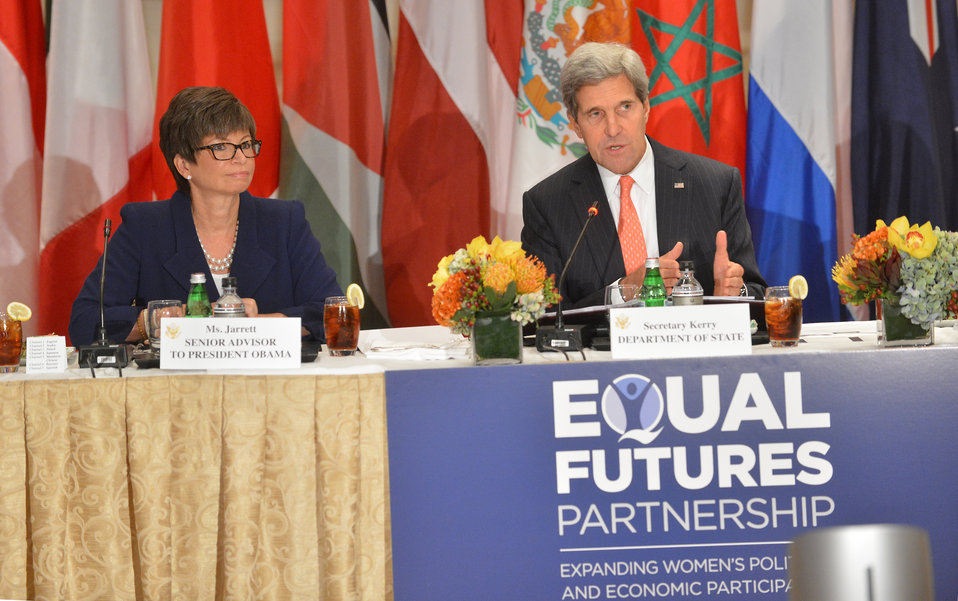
Secretary Kerry Participates in a Meeting of the Equal Futures Partnership

U.S. Secretary of State John Kerry participates in a meeting of the Equal Futures Partnership in New York City on September 23, 2013.